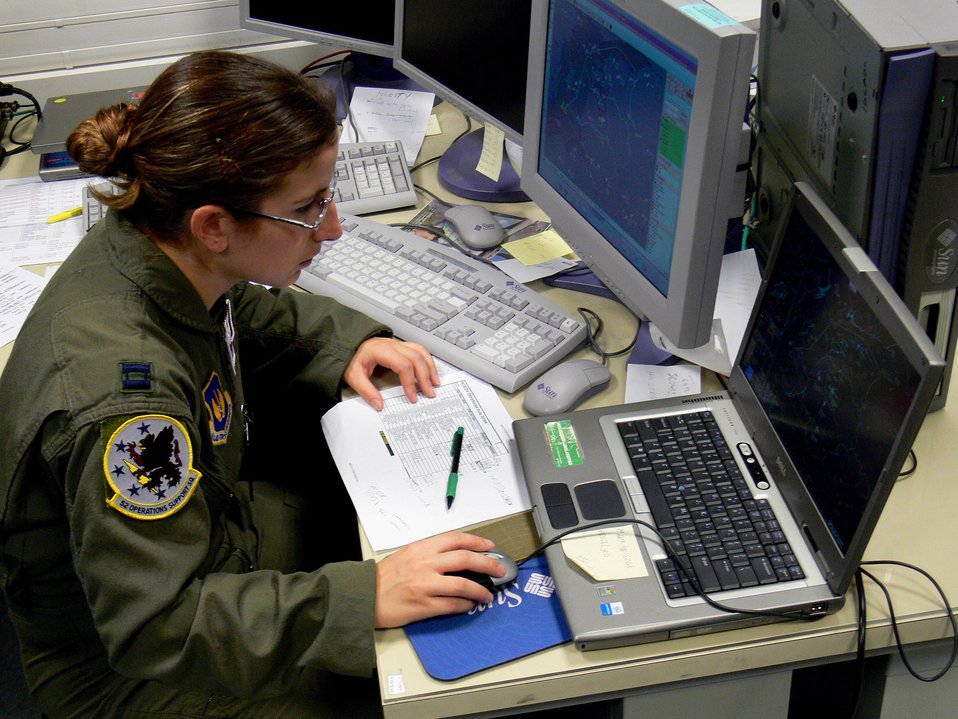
NATO team ensures safe sky during Riga Summit

Capt. Julie Sposito monitors the sky over the Baltic region Nov. 28. Captain Sposito is from the 52nd Operations Support Squadron at Spangdahlem Air Base, Germany, and served as senior director in the Combined Joint Air Operations Center in Riga, Latvia. NATO leaders from 26 nations met in Latvia for NATO's Riga Summit Nov. 28 and 29.